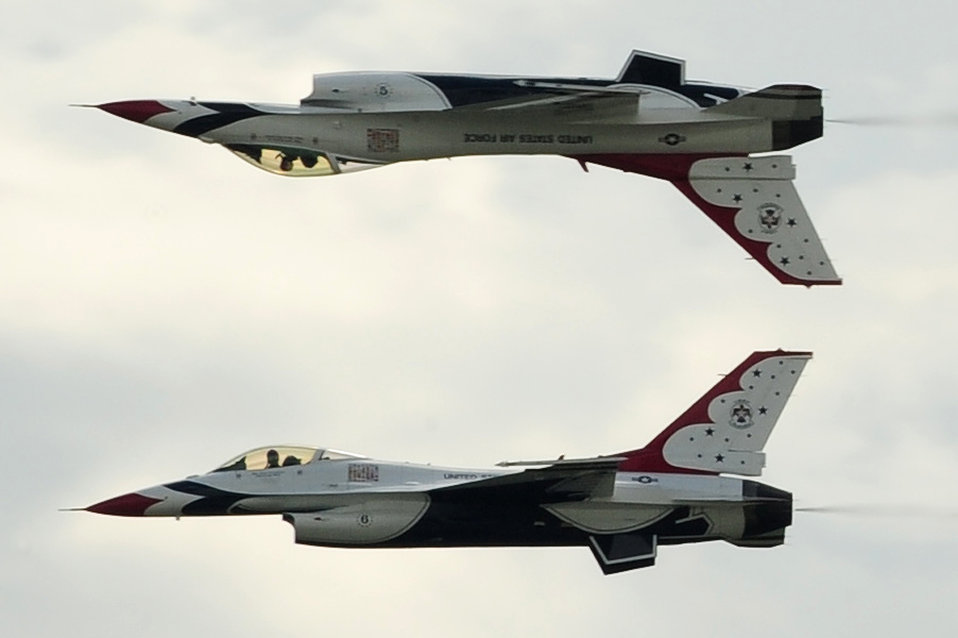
Mirror image

Air Force Thunderbirds No. 5 and 6 perform the calypso maneuver during the 2009 Dakota Thunder open house and airshow May 30 in South Dakota. The Thunderbirds are scheduled to perform in more than 70 shows in the United States, Puerto Rico and the Far East this year.